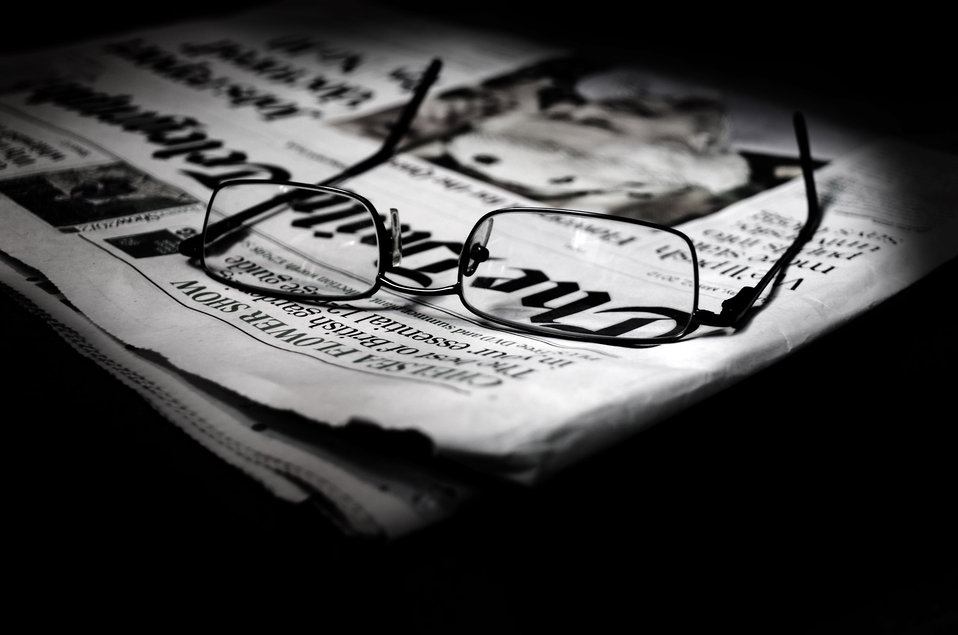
Newspapers and glasses.